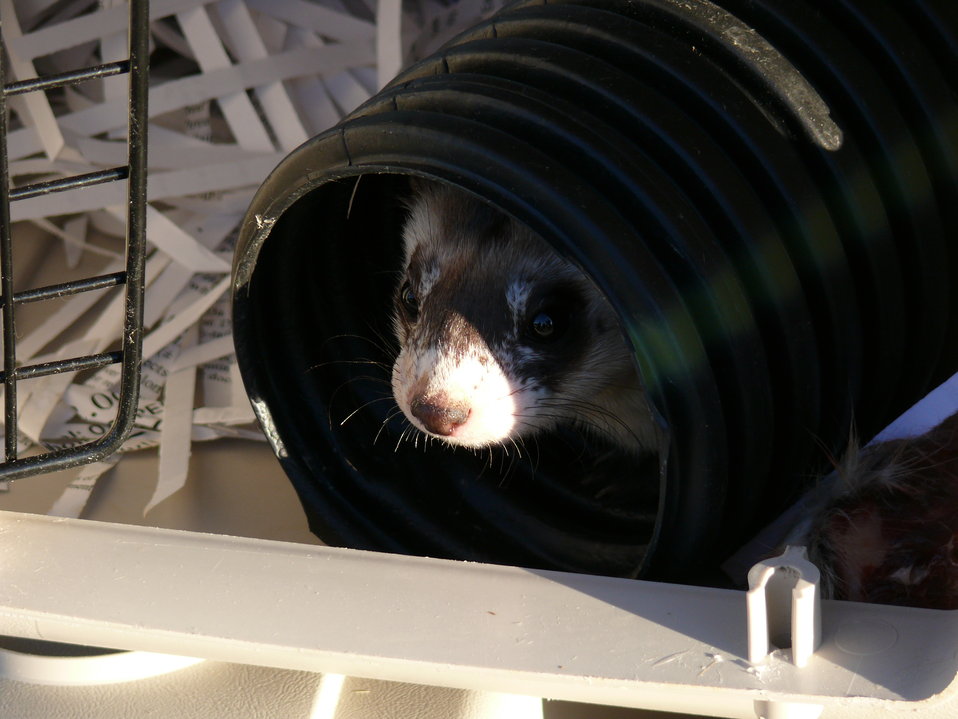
First Glimpse

The first black-footed ferret to set foot in Kansas after a 50-year absence needed to get a good look at its surroundings before exiting the pet carrier and familiarizing itself with its new home.

Credit: Dan Mulhern / USFWS

Photo Contest Entry #140